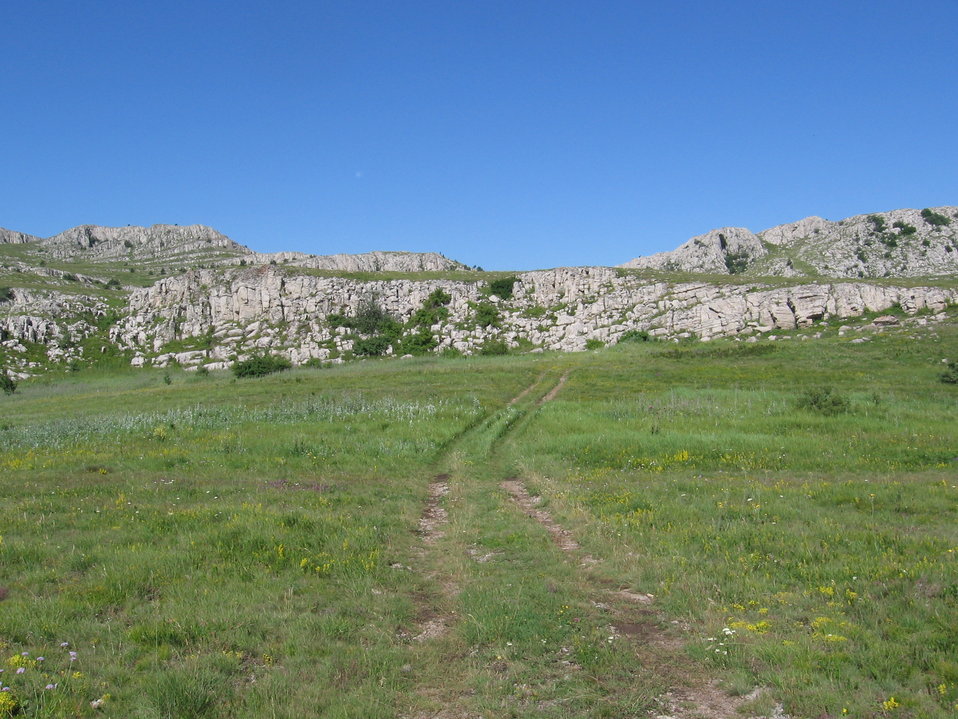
Українська: Бабуган